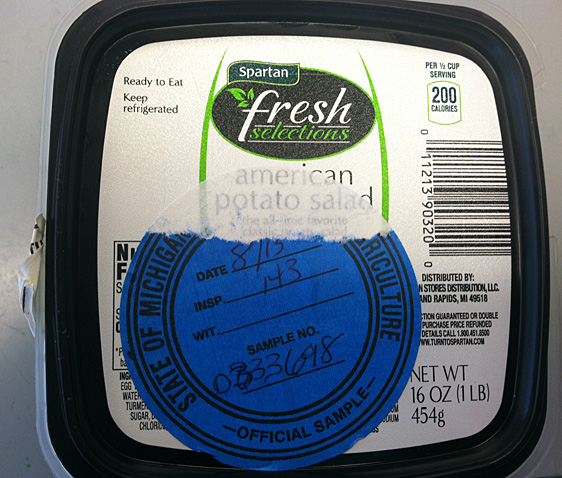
RECALLED – Spartan Fresh Selections American Potato Salad

August 29, 2013 – Product Recall – Spartan Fresh Selections American Potato Salad.